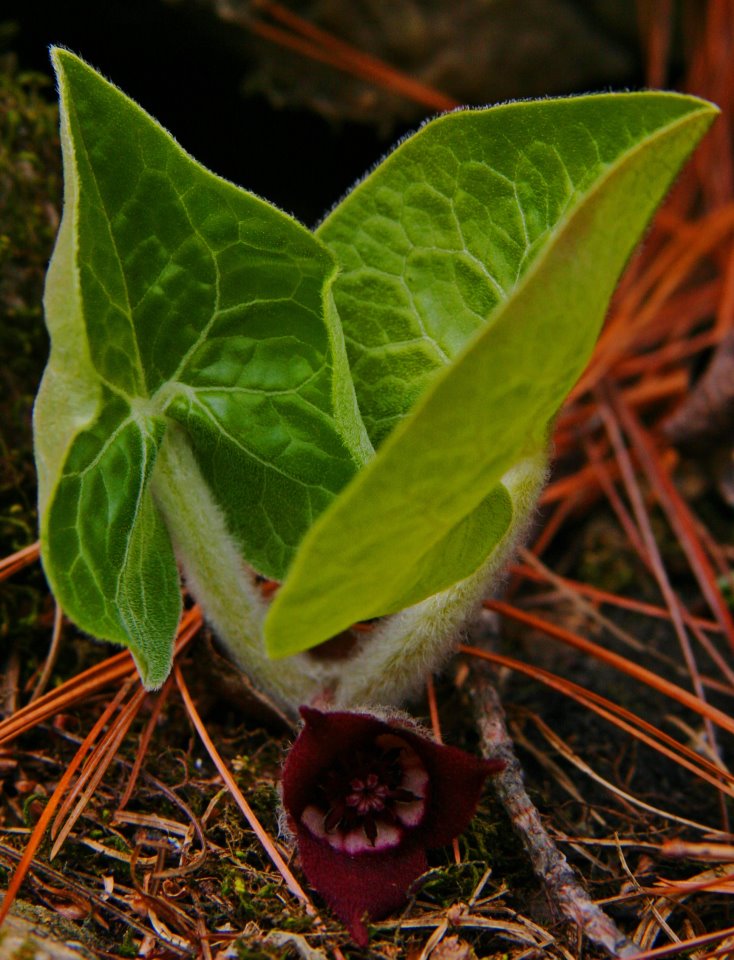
Wildginger

Spring Wildflowers appearing in Northern Vermont.